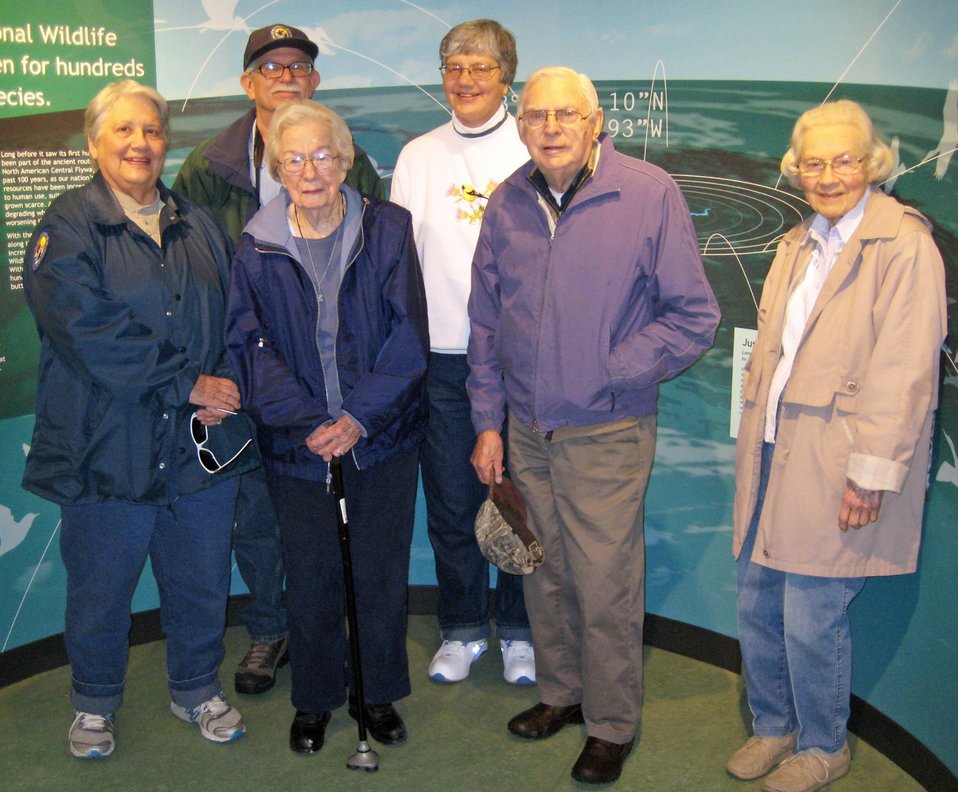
Karl Haller and ladies